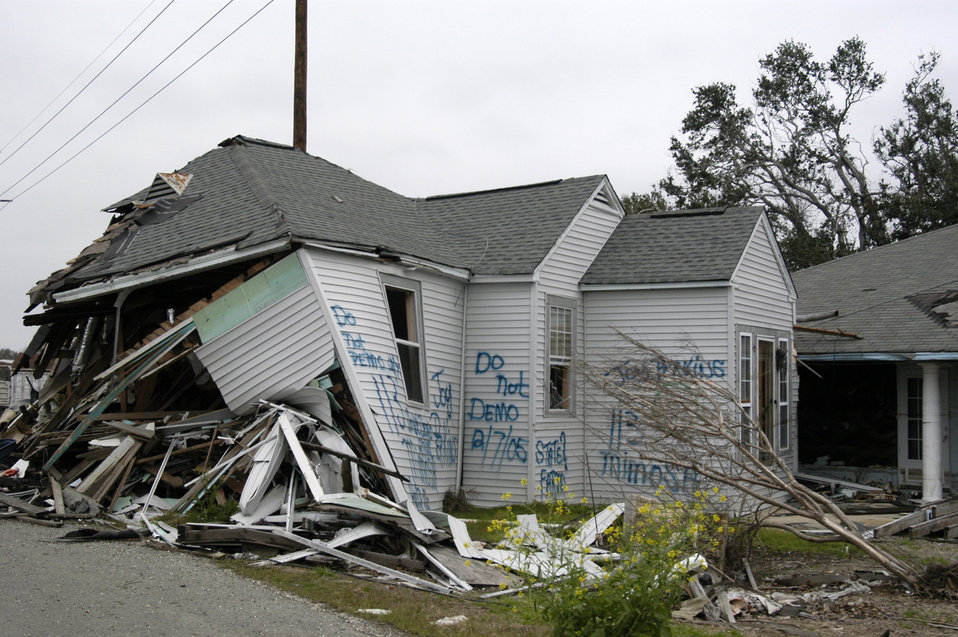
Houses were crushed and swept off their foundations by the flooding from a breached levee in the Ninth Ward, New Orleans, LA, due to the 20-foot storm surge from Hurricane Katrina that overwhelmed the flood control system. Katrina made landfall on Monday morning, August 29, 2005 as a Category 3 hurricane with sustained winds of 125 mph with over a 20-foot storm surge. Katrina caused catastrophic damage over 90 thousand square miles across Louisiana with an estimated $75 billion dollars in damage. The total economic impact to the Gulf Coast was estimated at over $150 billion. 80% of New Orleans, LA, was underwater with some areas more than 20 feet deep. Less than a month later southern Louisiana was struck by a second Category 3 hurricane Rita inflicting more damage in the southwestern areas of Louisiana adding an addition $12 billion worth of damage to the already beleaguered state. The U.S. Army Corps of Engineers (USACE) under the auspices of Federal Emergency Management Agency (FEMA) was the lead service in providing assistance to the citizens of Louisiana. The U. S. Department of Agriculture (USDA) supplied emergency food aid, emergency loan assistance to farmers and home owners, and USDA personnel from around the nation volunteered their time and muscle to aid in the recovery operations.